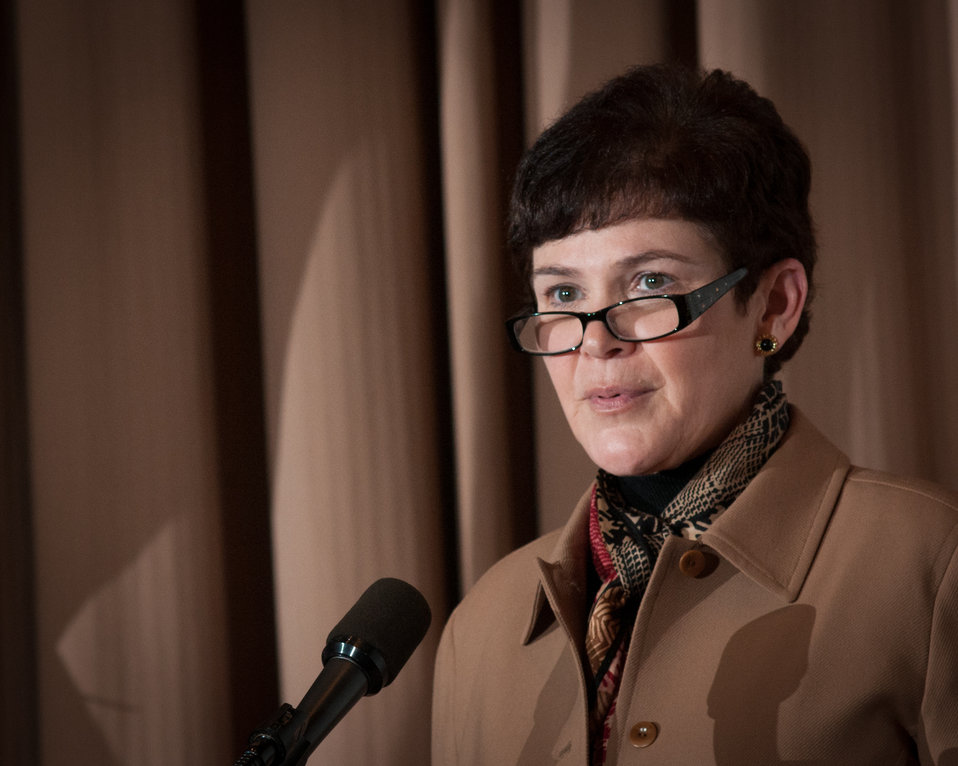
U.S. Department of Agriculture (USDA) Chief of Staff Krysta Harden, the mistress of ceremonies for the 2013 Women’s History Month Observance in the Jefferson Auditorium with an event themed “Women Inspiring Innovation Through Imagination: Celebrating Women in Science, Technology, Engineering, and Mathematics, onThursday March 21, 2013, in Washington, D.C.